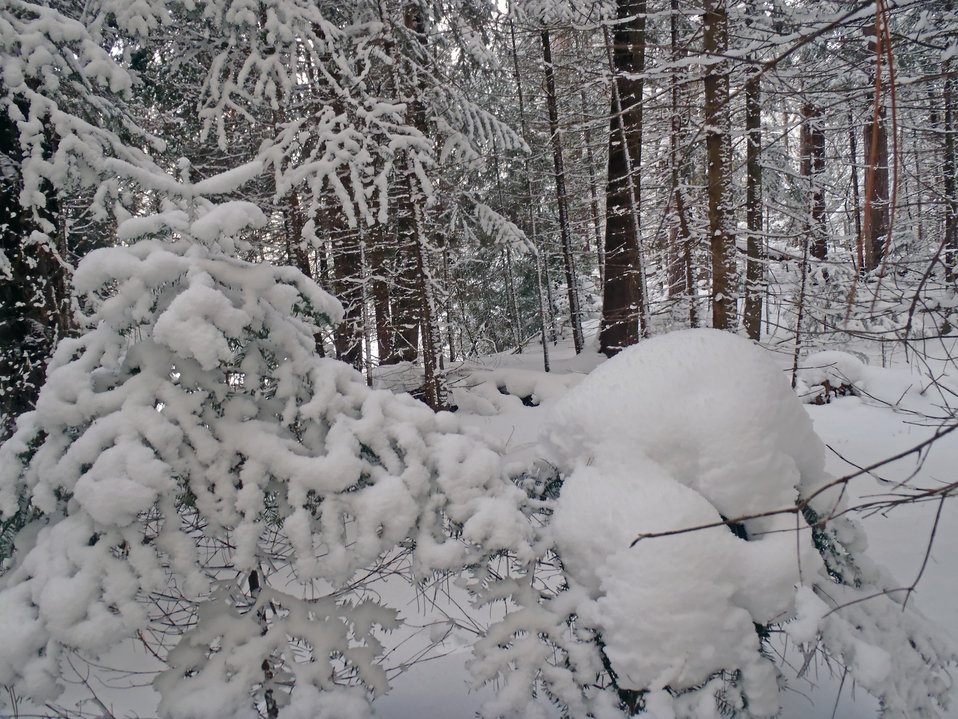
Winter at Seney National Wildlife Refuge